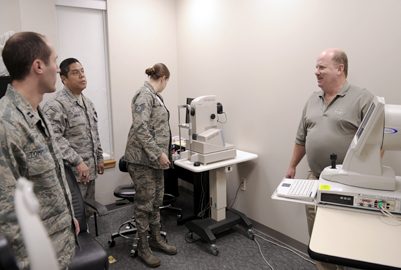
Retina imaging

Kevin Ott, a representative from manufacturer Carl Zeiss Meditec, Inc., answers questions from Airmen about the new high-definition optical coherence tomography machine, Dec. 10, 2010, at Moody Air Force Base, Ga. The 23rd Aerospace Medicine Squadron at Moody Air Force Base, Ga., will start using the new machine for appointments in the near future, which will yield a quicker diagnosis.